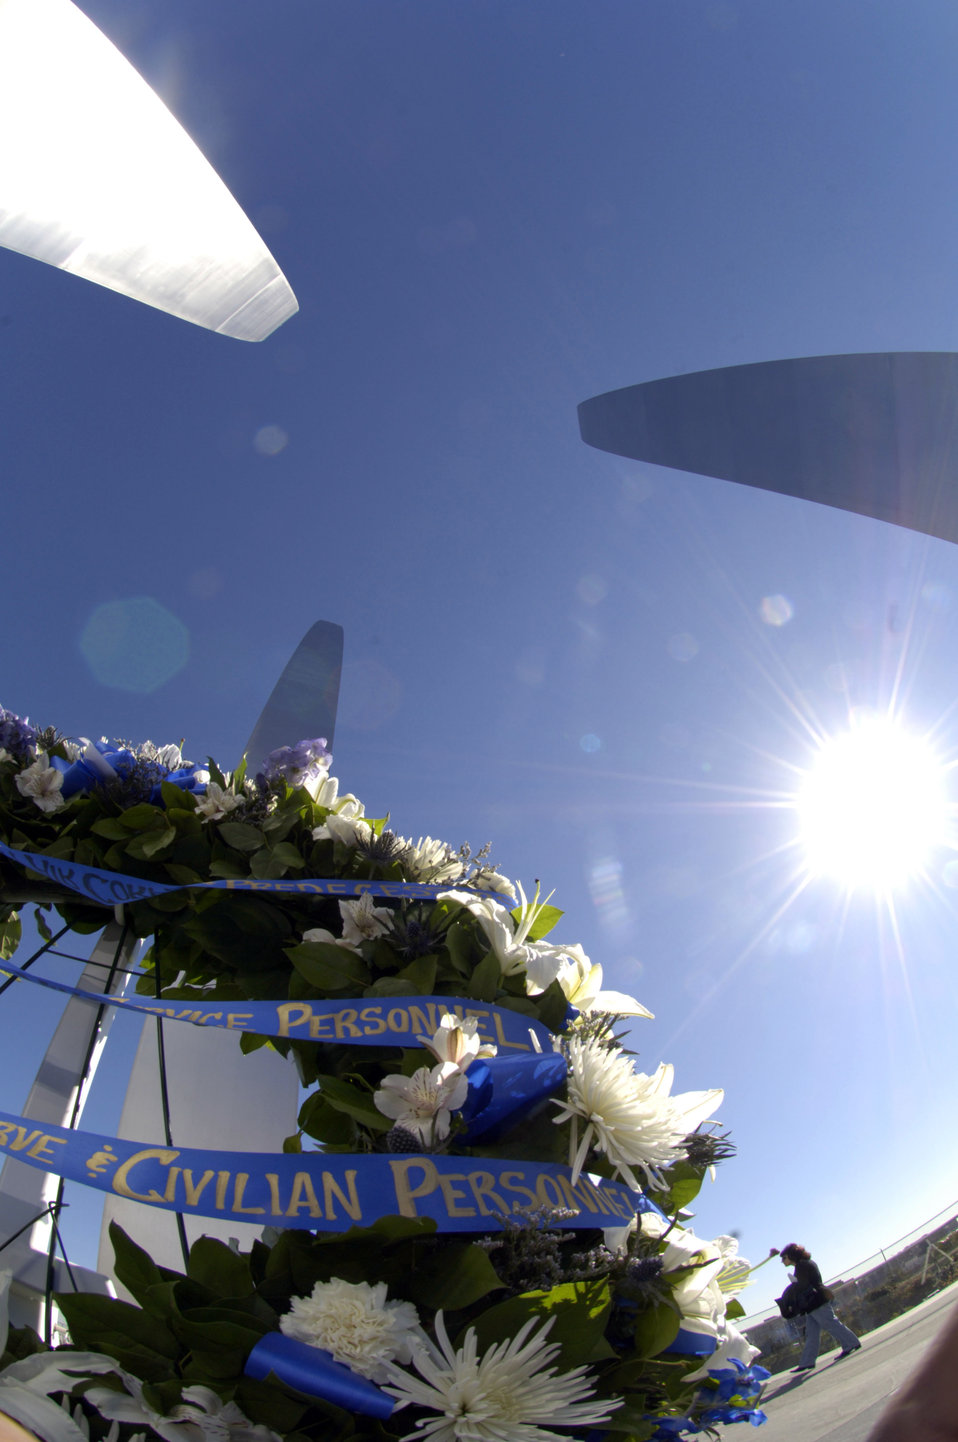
Wreath Ceremony

The wreath, placed at the base of the new Air Force Memorial by Secretary of the Air Force Michael W. Wynne, glistens in the sun here in Arlington, Va., Oct. 15. Secretary Wynne was joined by fromer Secretaries of the Air Force, current Chief of Staff T. Michael Moseley and former Chief of staffs and Chief Master Sergeant of the Air Force Rodney McKinley as well as former Chief Master Sergeants of the Air Force in the wreath ceremony. On behalf of all American citizens President George W. Bush accepted the Air Force Memorial from Air Force Memorial Foundation Chairman Ross Perot Jr. during the previous day's dedication ceremony at the base of the Air Force Memorial that overlooks the Pentagon. Designed by the late James Ingo Freed the memorial with its three soaring spires inspired by the U.S. Air Force Thunderbirds bomb burst manuever, pays tribute to and honors the patriotic men and women of the U.S. Air Force and its predeccessor organizations. An open house was held near the Pentagon in conjunction with the dedication ceremony which featured performances by the U.S. Air Force Band, the U.S. Air Force Honor Guard drill team, and culminated with a concert featuring country music performer LeeAnn Womack.